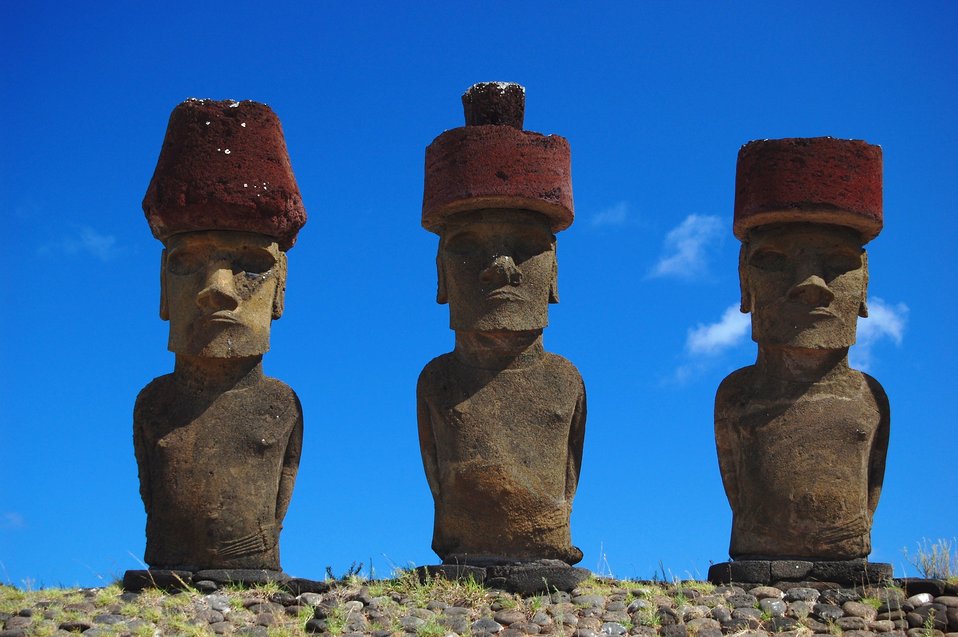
Moai with red topknot hats at Anakena Ahu Na